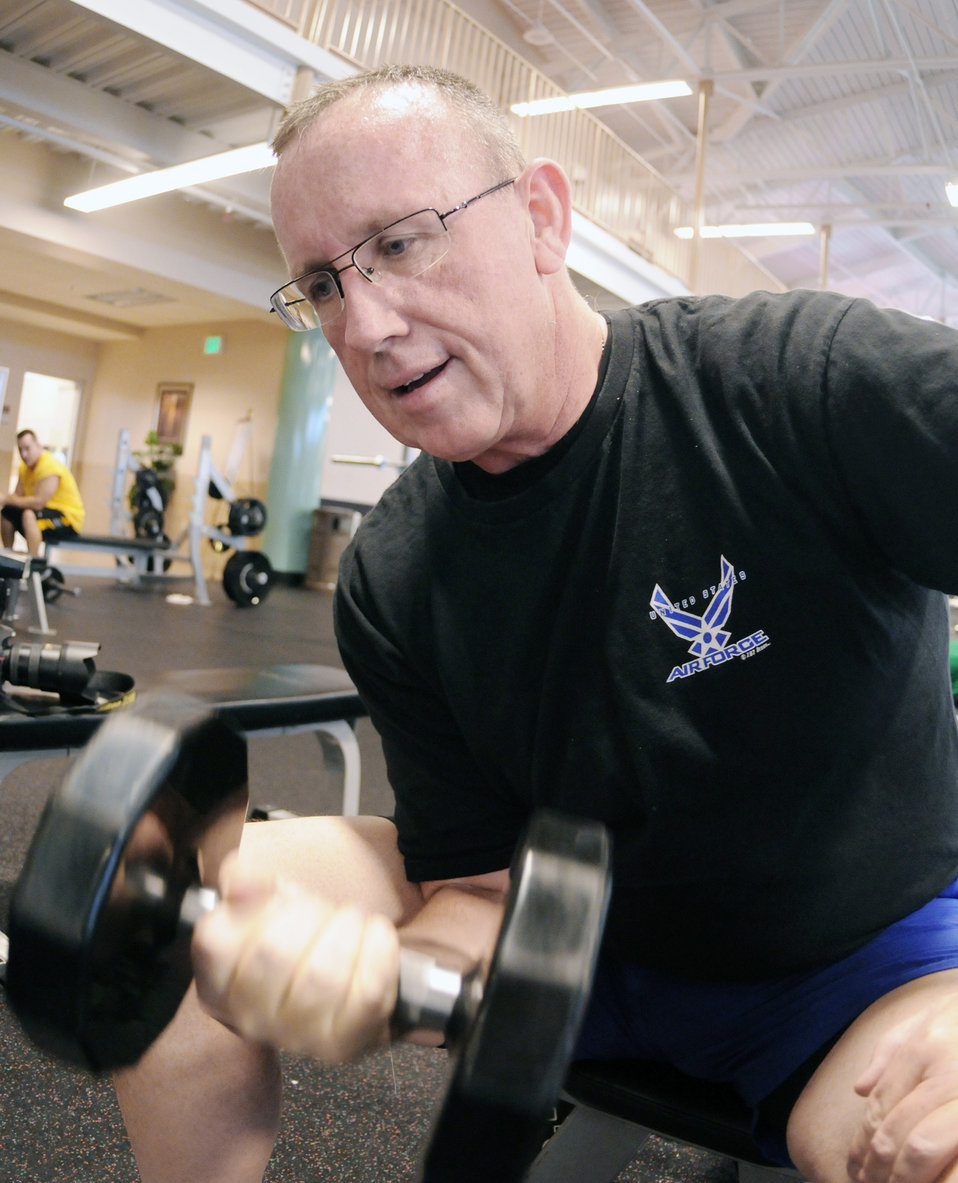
Bariatric surgery patient's work out routine

Mike Porter works out with weights Dec. 22, 2009, at the Rambler Fitness Center at Randolph Air Force Base, Texas. Mr. Porter shrunk from a peak of 334 pounds to 198 pounds following bariatric surgery and strict diet and exercise. Mr. Porter is the 12th Force Support Squadron assistant lodging manager.